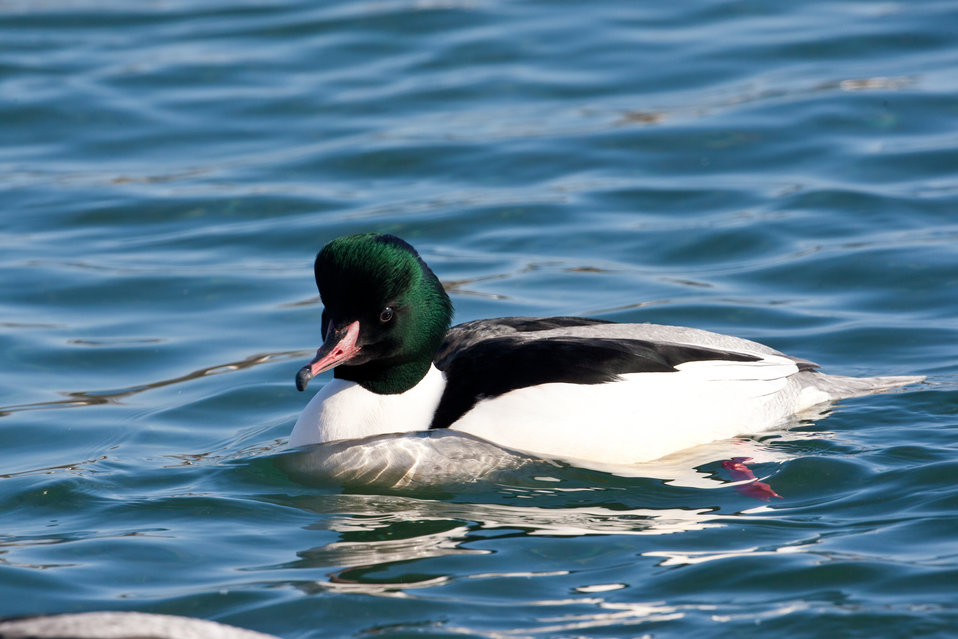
Common merganser (Mergus merganser)

Adult male with breeding plumage.